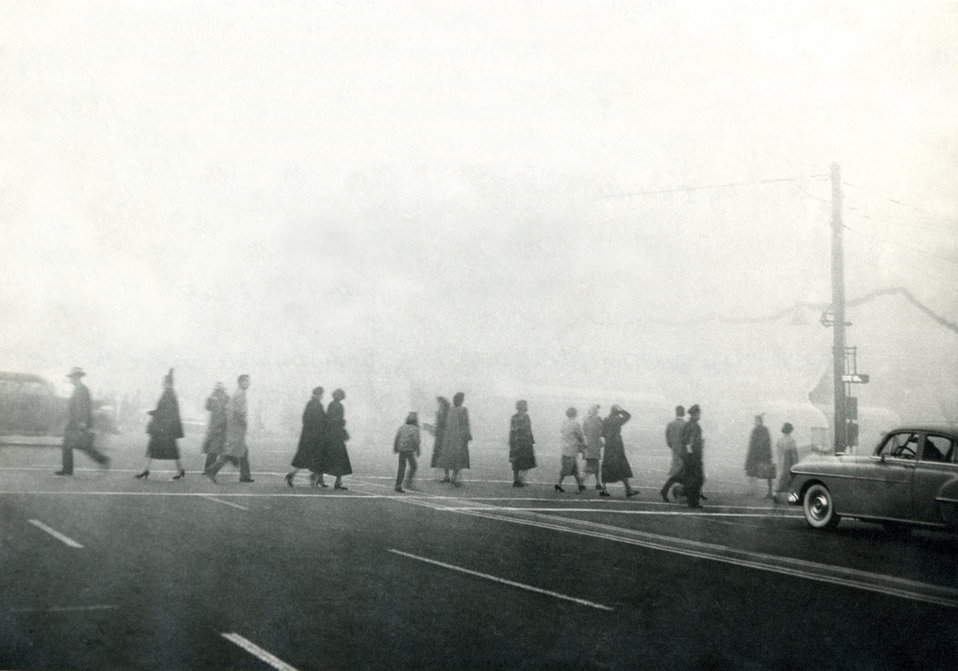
This 1950s historical photograph was provided by the Center for Disease Control's (CDC), National Institute for Occupational Safety and Health (NIOSH). The image showed an extreme air pollution event due to Salt Lake City, Utah smog, which occurred on November 11, 1950, and was made as part of a U.S. Public Health Service (USPHS) study. Air pollution can be a major cause of a variety of respiratory illnesses.